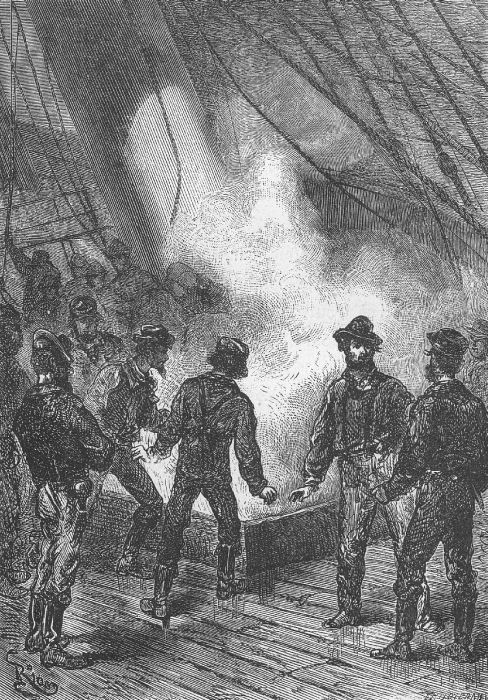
An ilustration from the novel 'The Survivors of the Chancellor: Diary of J. R. Kazallon, Passenger' by Jules Verne drawn by Édouard Riou. Polski: Ilustracja powieści Juliusza Verne'a 'Chancellor. Notatki podróżnego J. R. Kazallon' autorstwa Édouarda Riou. Français : 'Le Chancellor: Journal du passager J.-R. Kazallon', Édouard Riou. Orginal description from the book: Français : Les matelots du quart avaient aperçu une légère fumée.